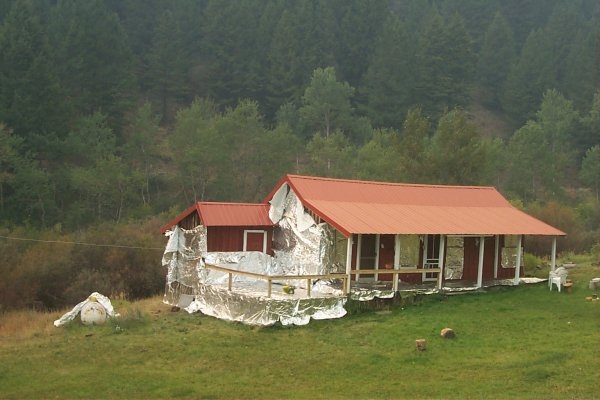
Fire retardant measures Urban interface Fire Clearwater Fire Salmon Field Office USRD Upper Snake River District